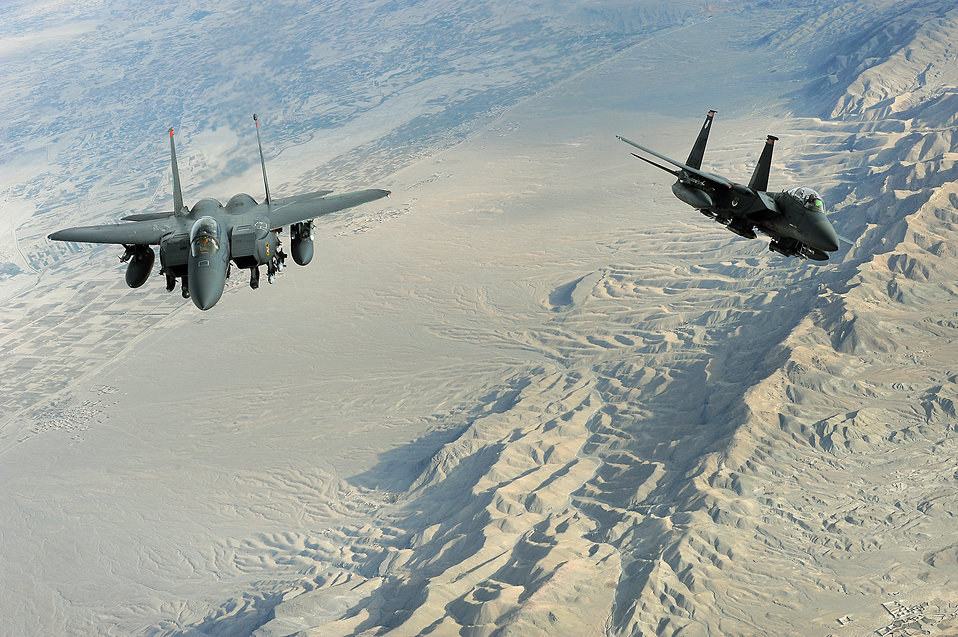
Controlling the sky

Two F-15E Strike eagles fly a mission over Afghanistan on Nov. 7. The aircraft uses two crew members, a pilot and a weapon systems officer. Previous models of the F-15 are assigned air-to-air roles; the